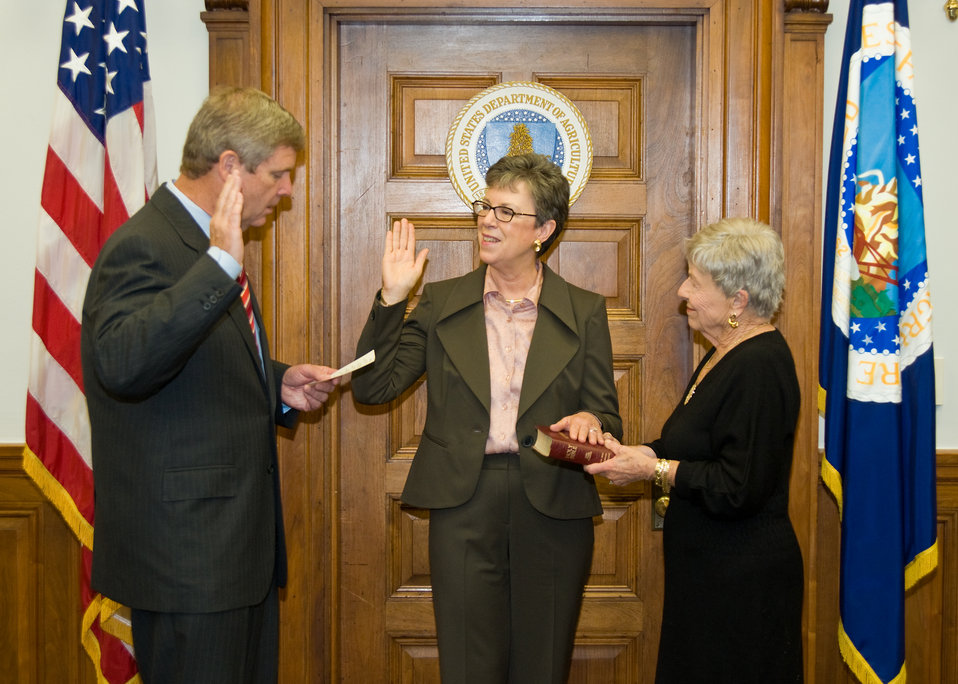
Agriculture Secretary Tom Vilsack appoints Dr. Cathy Woteki as Undersecretary, Research Education and Economics during a swearing-in ceremony at the United States Department of Agriculture, Monday, October 4, 2010. Dr. Wotecki’s mother accompanied her at the ceremony. USDA Photo 10di1514-10 by Bob Nichols.